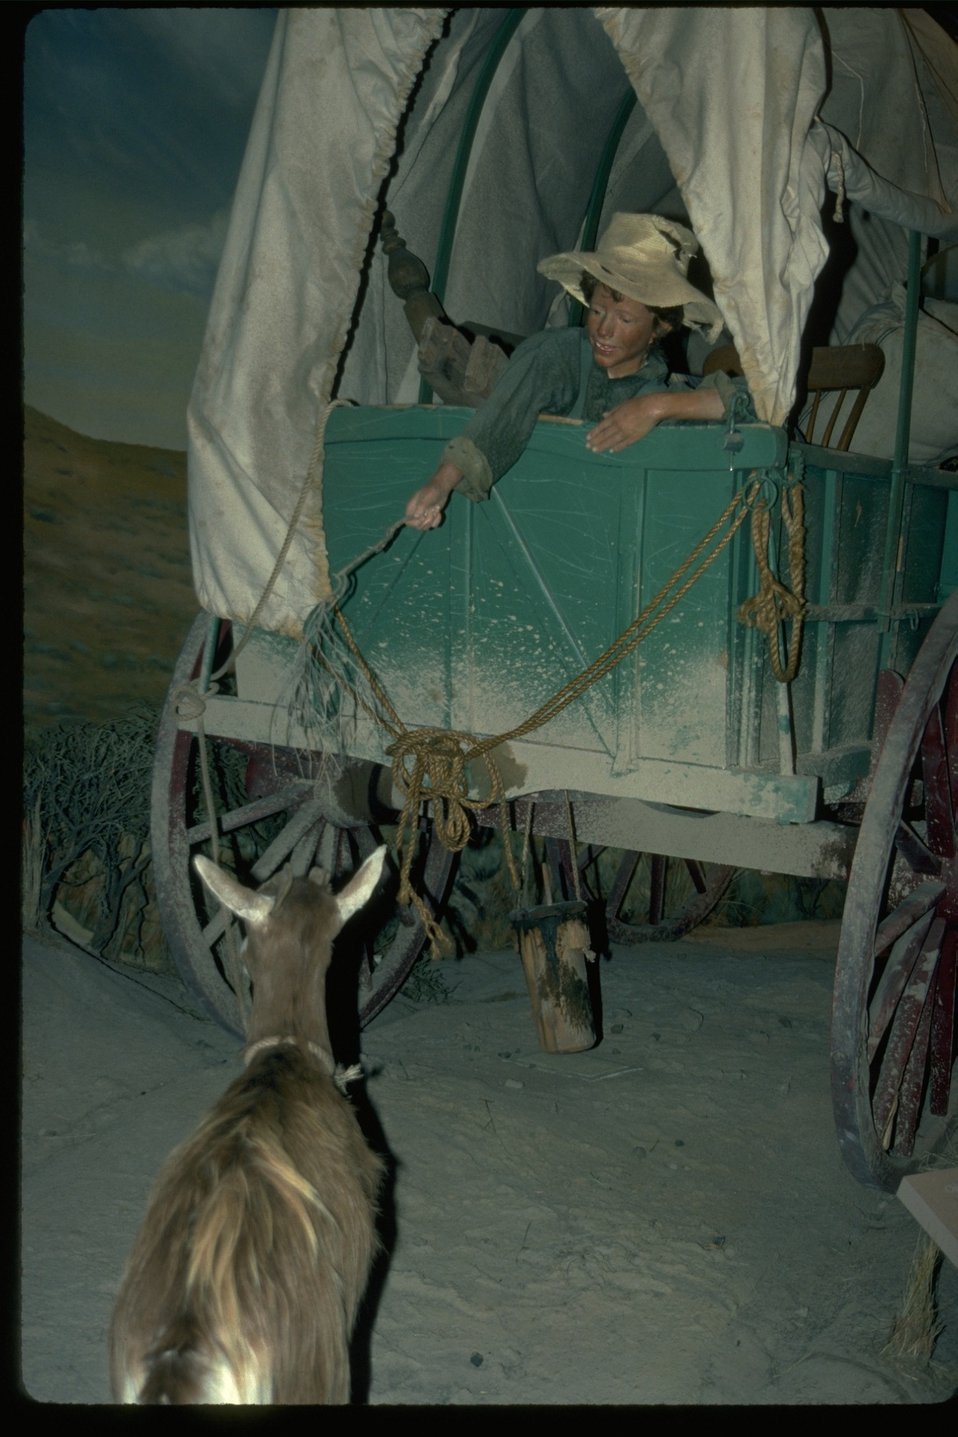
Living history exhibit at the NHOTIC with a child temping a goat to the rear of the wagon.